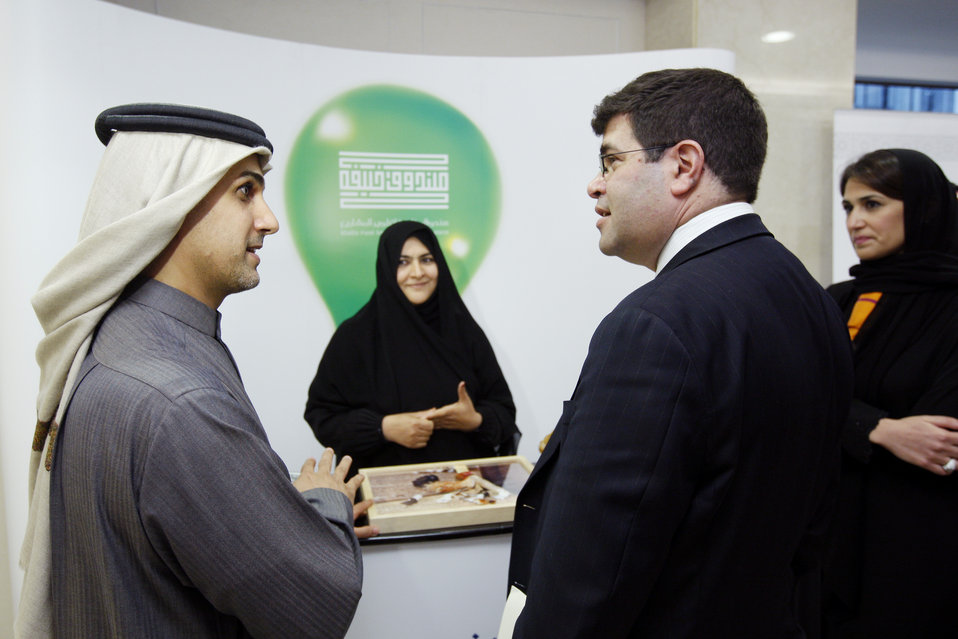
Wolin and young Emiratis

On February 15, Deputy Secretary Wolin discussed economic growth with young Emiratis in Abu Dhabi, UAE.